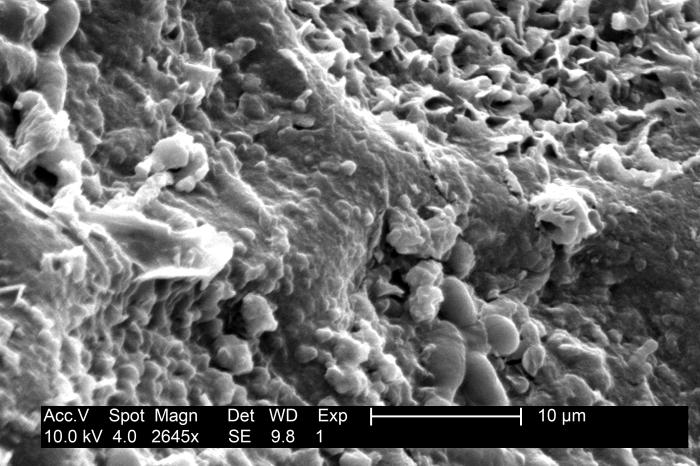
Magnified 2645X, this electron micrograph reveals the details of the textured surface found on a honeydew melon, Cucumis melo.Tips for Fresh Produce SafetyBuying Tips: